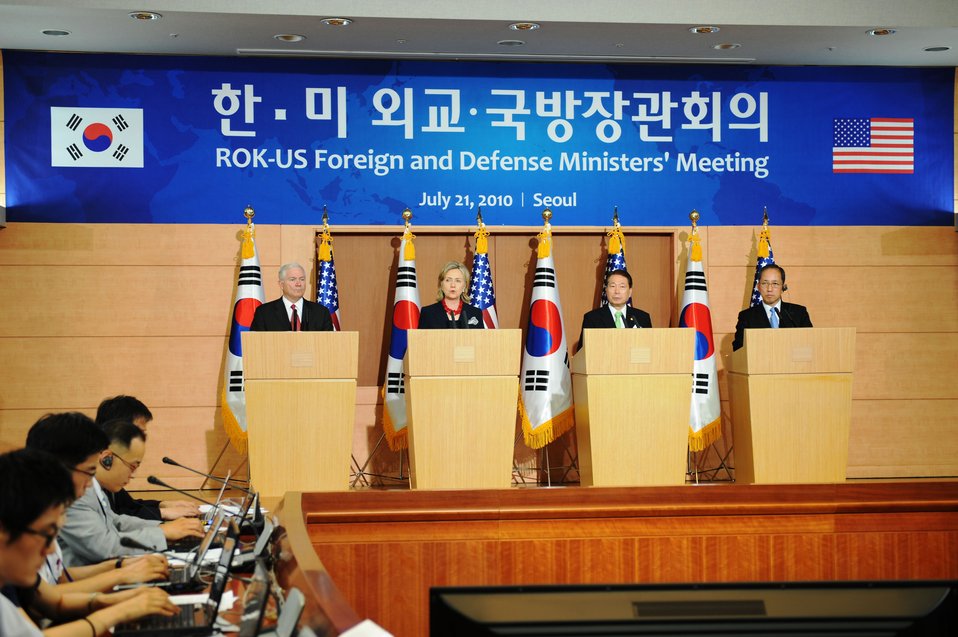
Secretary Clinton Address the Press

U.S. Secretary of State Hillary Rodham Clinton addresses the press in a joint press availability while U.S. Secretary of Robert M. Gates, Republic of Korea Foreign Minister Yu Myung-hwan, and Republic of Korea Defense MInister Kim Tae-young listen following the inaugural 2 2 Meetings between the United States and the Republic of Korea held in Seoul, Republic of Korea, on July 21, 2010.